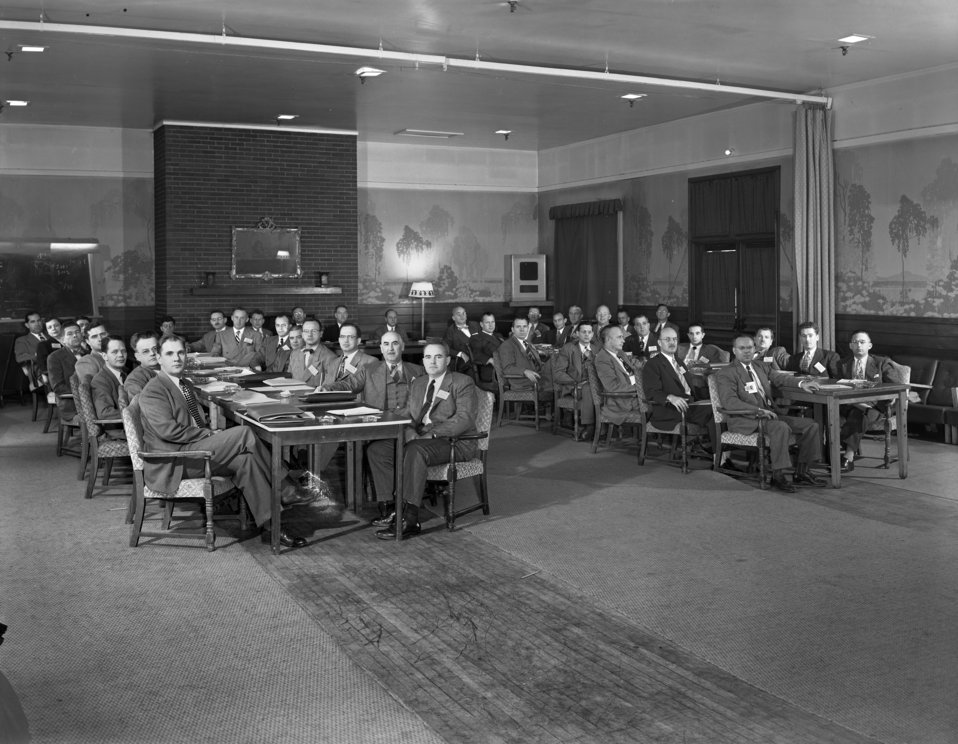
Finance and Budget Conference Ridge Hall Oak Ridge 1950

5783-1 DOE photo Ed Westcott 1-13-1950 Oak ridge Tennessee